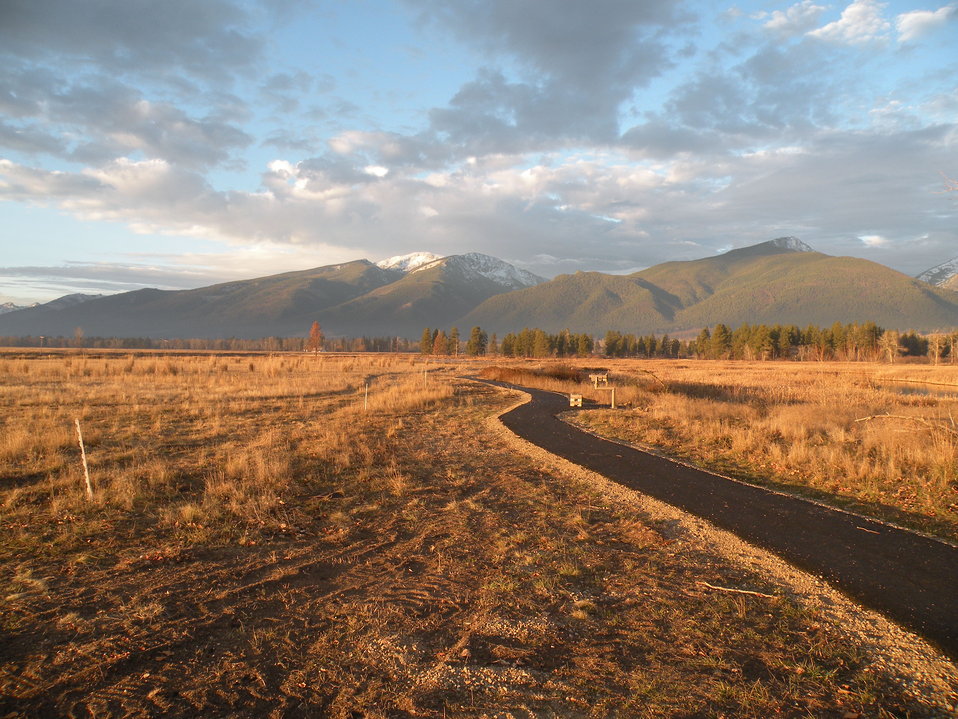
Kenai Nature Trail in Fall

Accessible portion of Kenai Nature Trail at Lee Metcalf National Wildlife Refuge.